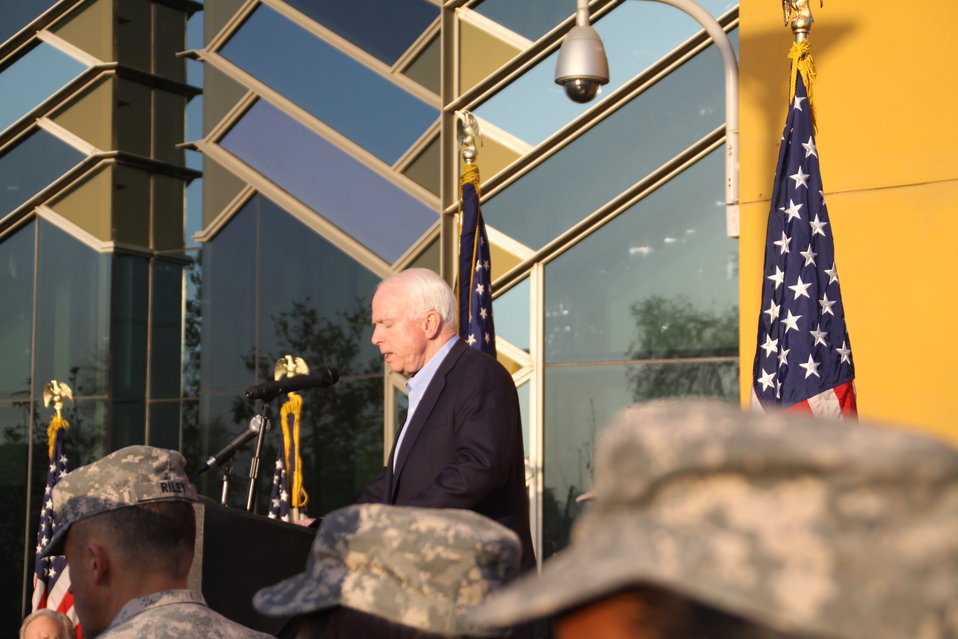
Senator McCain